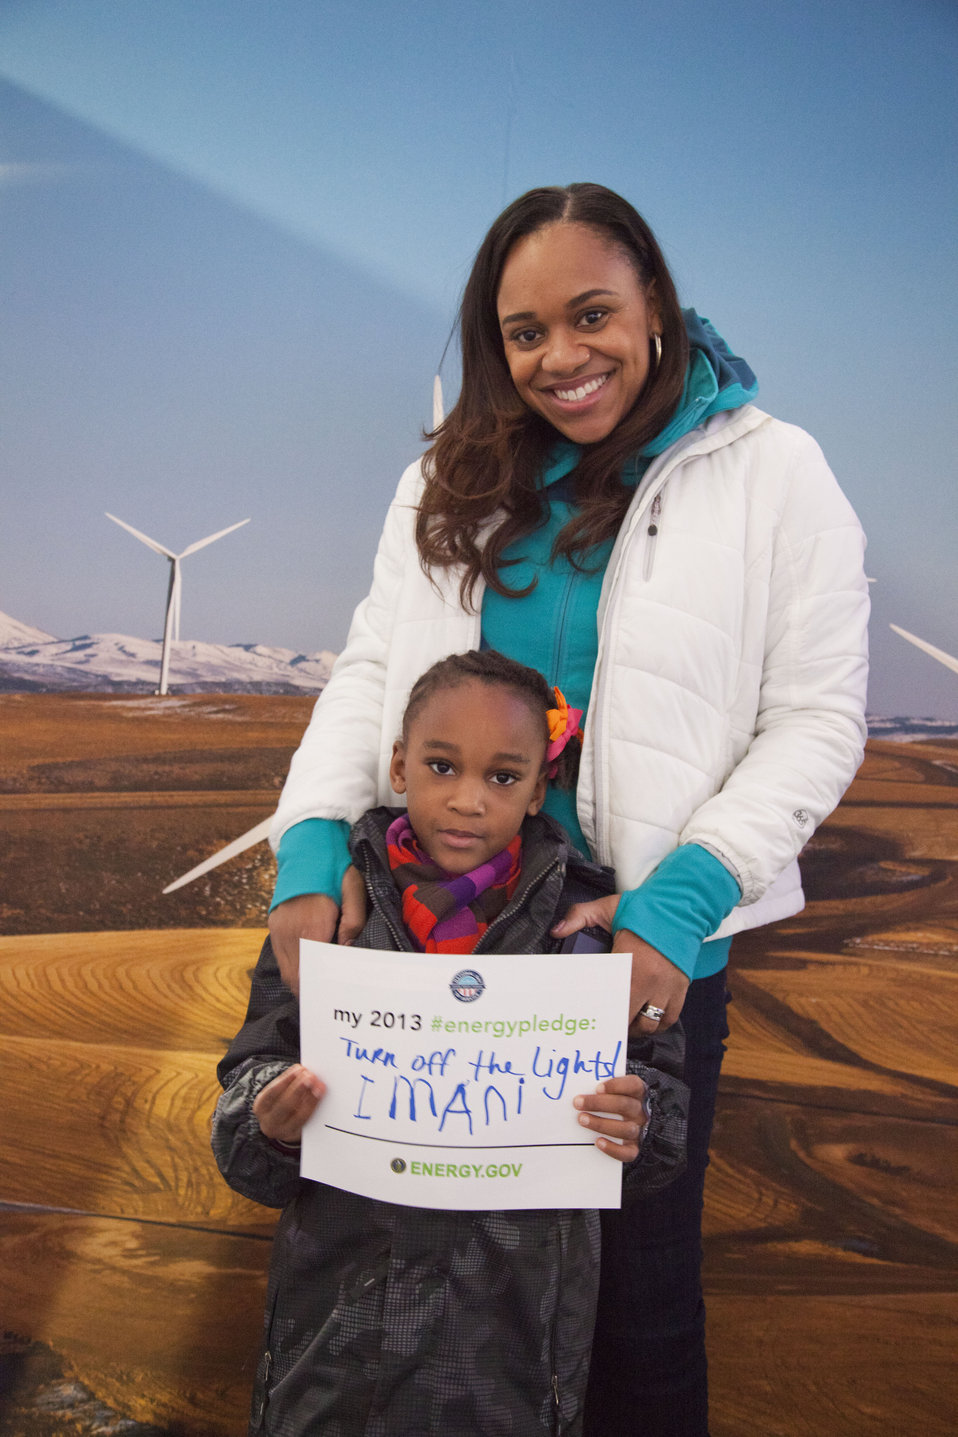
What's your #energypledge?